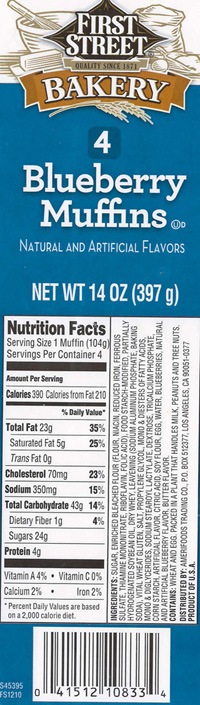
RECALLED – Blueberry Muffin 14oz and Blueberry Loaf Cake 16oz.

September 9, 2013 – Product Recall – Bubbles Baking Co. Issues an Allergen Alert for Undeclared Milk and Soy in First Street Label Blueberry Muffins, 14 oz. 9 Trays/ Case and Blueberry Loaf, 16 oz. 12 Trays/Case.